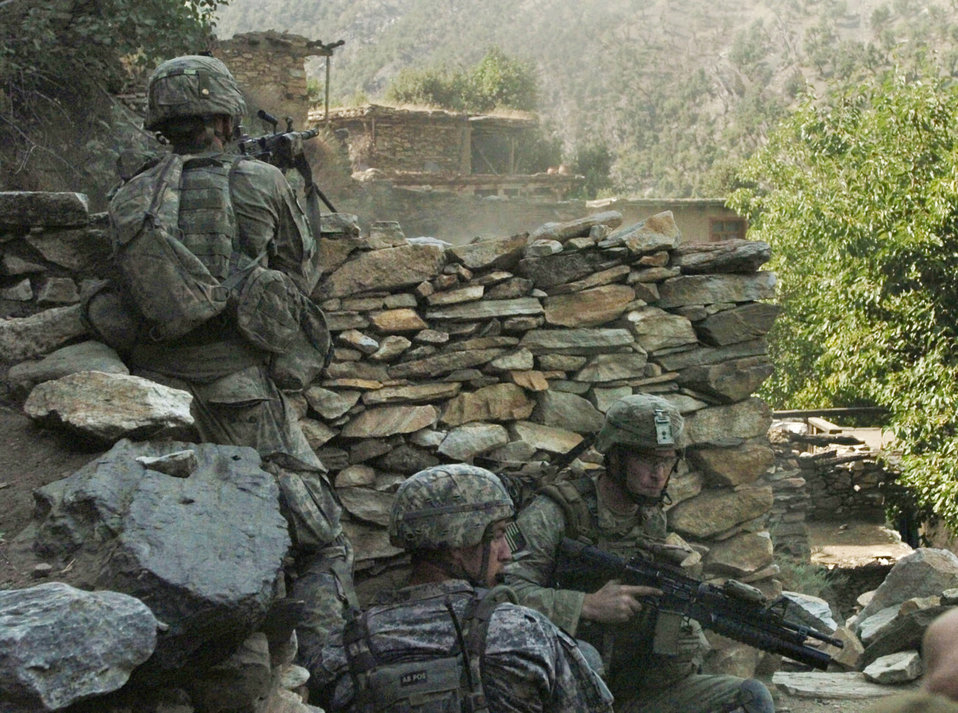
Gunfight and Airstrike in Korengal Valley

U.S. Army and Air Force personnel assigned to Company B, 2nd Battalion, 12th Infantry Regiment, 4th Brigade Combat Team, 4th Infantry Division, return fire Aug. 13 at insurgent positions in the Korengal Valley's steep hillside in Afghanistan's Kunar Province. The 20-minute gun battle ended when 500 pound bombs, dropped by Air Force F-15E Strike Eagles, destroyed insurgent positions in the surrounding hills. No civilians were injured during the battle. International Security Assistance Force troops across Afghanistan have increased operations in recent months, in order to ensure safety and security during Afghanistan's second national election, scheduled for the end of August.